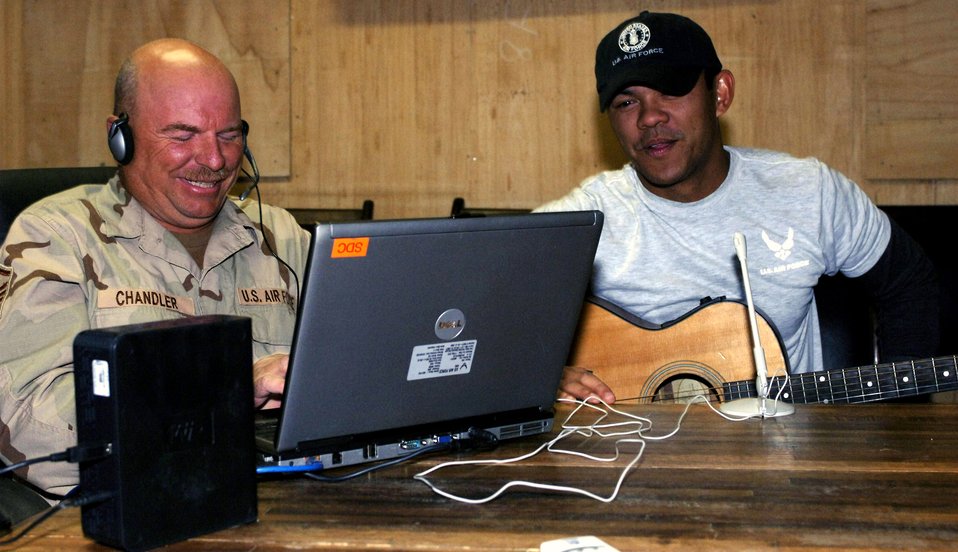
Bagram Airman uses music to bring families together

Master Sgt. Tim Chandler (left) of Ashland, Ohio and Staff Sgt. John DeLeon of Redlands, Calif., share a joke during a live broadcast of an Internet radio show at Bagram Air Base, Afghanistan Oct. 28. Sergeant Chandler hosts the show during his free time, and Sergeant DeLeon performs his songs. The program gives Bagram Airmen a vehicle to send long-distance dedications back home to their loved ones. Both Airmen are currently assigned to the 455th Air Expeditionary Wing.